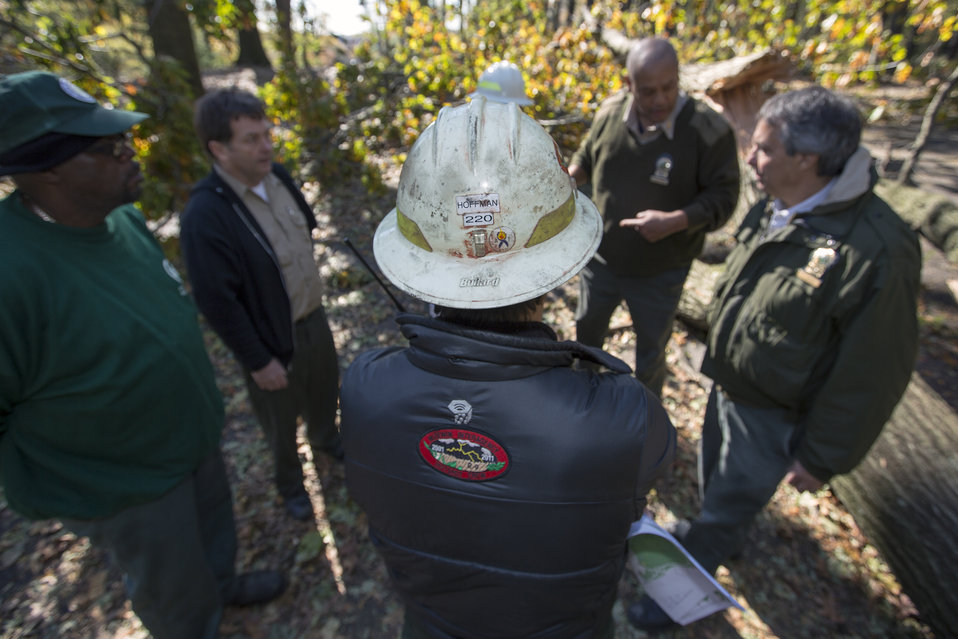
U.S. Forest Service (USFS) Division Supervisor Jerry Hoffman meets with New York City Park officials about clearing Forest Park in Queens, NY of hazardous downed trees to make it safe for residents in the area on Nov. 4, 2012. The park is a major walking thoroughfare including popular recreational trails. Division Superintendent with the Midewin Interagency Hot Shots from Wilmington, IL Jerry Hoffman took on the role of Division Supervisor of multiple USFS crews from all over the country, including Ohio, Arkansas, Virginia, and Illinois in response to Hurricane Sandy in New York.